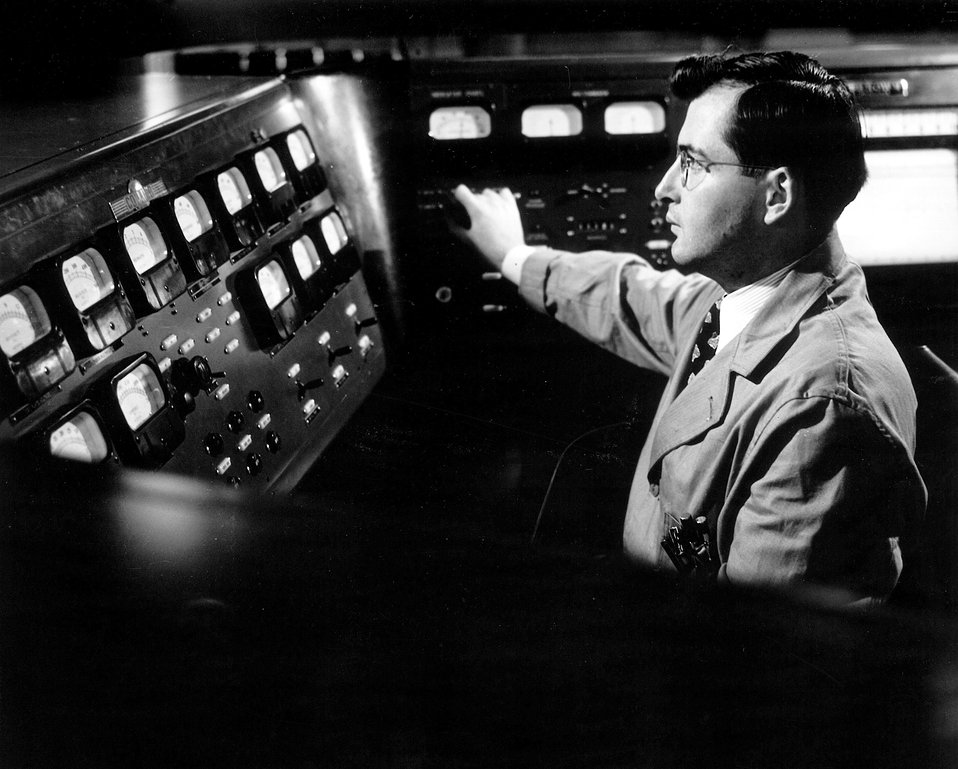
The Cycotron at ABC's Brookhaven National Laboratory,
accelerates sub-atomic particles to 23 million electron volts to bombard a
variety of targets in order to supply radioisotopes for basis research and to
provide an external particle beam for biological, medical and physical research.